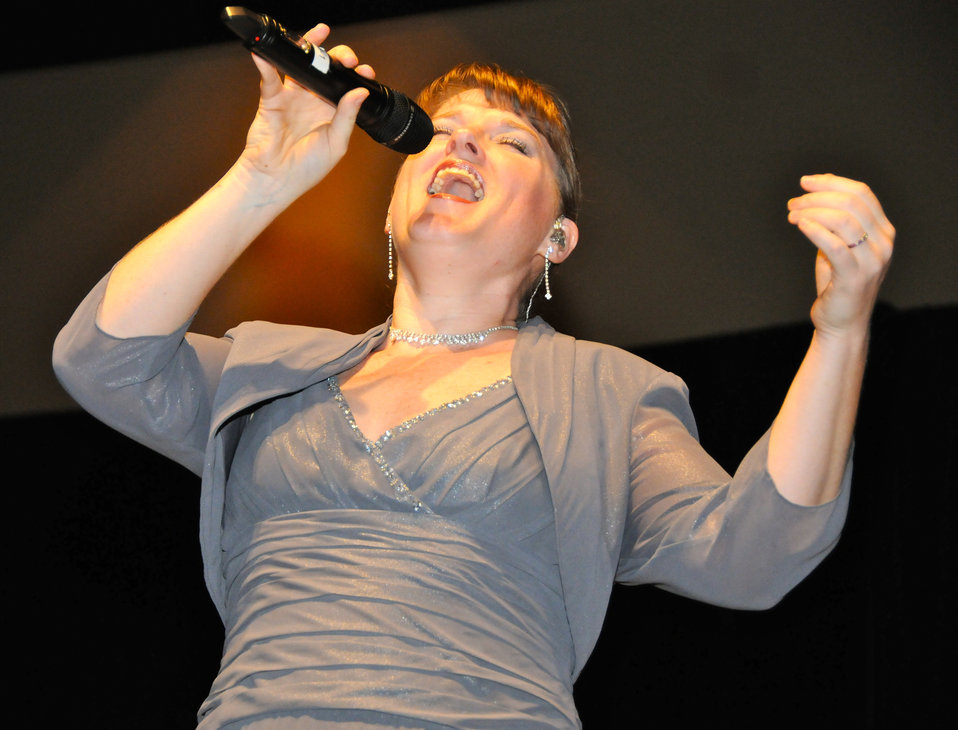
Airmen of Note wrap up

Tech. Sgt. Paige Martin entertains the audience March 18, 2011, at the Meadowview Convention Center in Kingsport, Tenn. The Airmen of Note traveled through Virginia, Tennessee, Mississippi and Arkansas on it's 2011 Spring Tour. Sergeant Martin is an Airmen of Note vocalist.